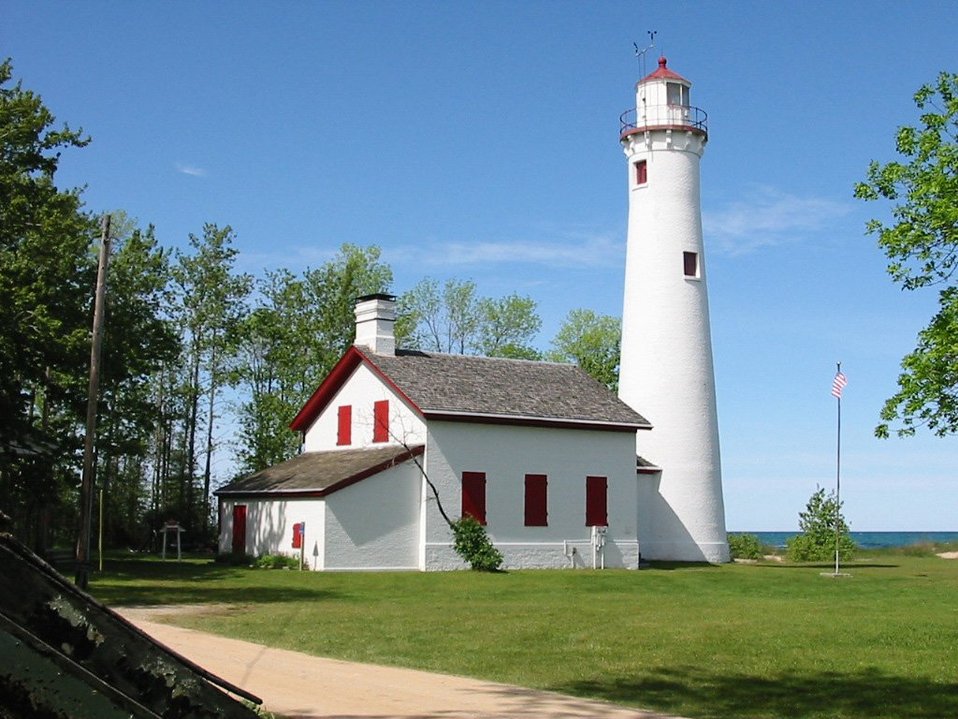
Sturgeon Point Light, Lake Huron